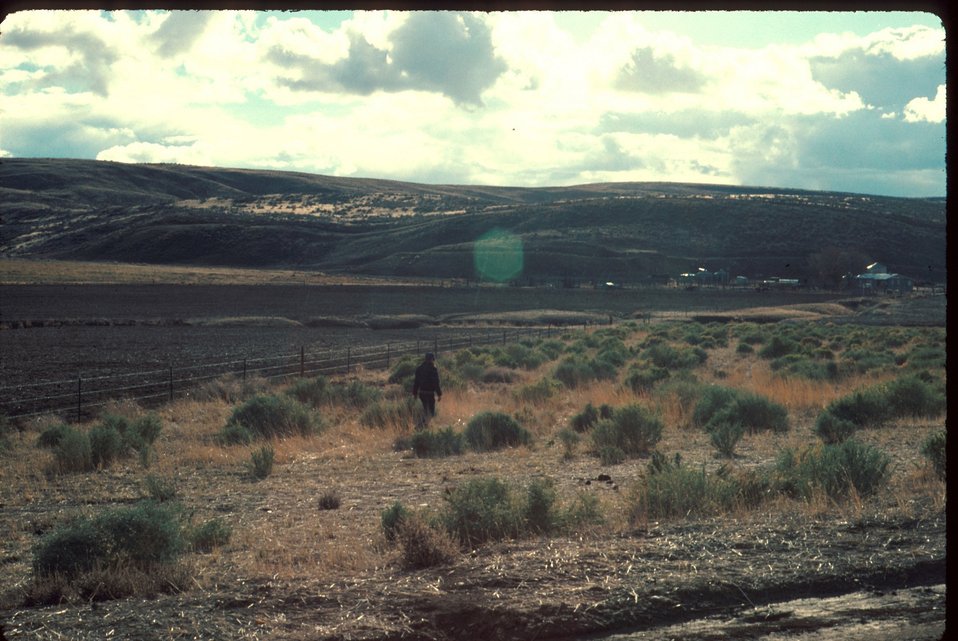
Private landowner increasing his winter cow feed by planting four wing saltbush Brush, grass